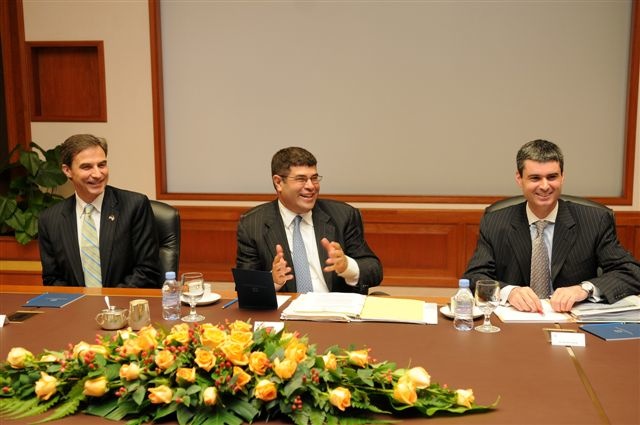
Deputy Secretary Wolin's Trip to the Pacific Rim

Deputy Secretary Wolin was in Kuala Lumpur, Malaysia to highlight U.S. support for Malaysia’s goal of raising growth and incomes through comprehensive economic reforms.